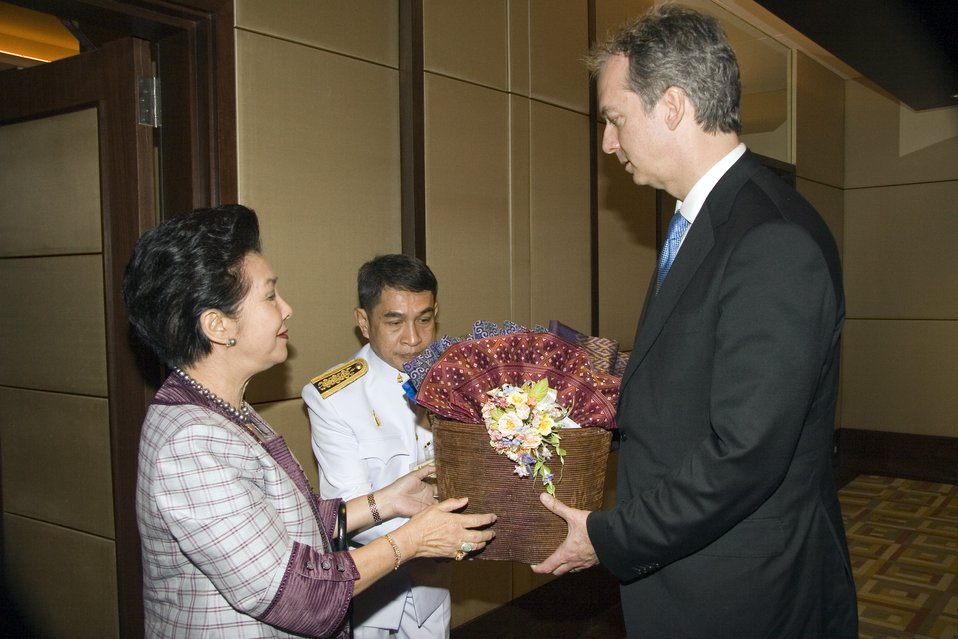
U.S. Ambassador to Thailand Meets With Thai Queen’s Lady-in-Waiting

The Queen’s Lady-in-Waiting, Thanpuying Nravadi Chaixanien, presents a gift to U.S. Ambassador to Thailand Eric G. John at the Conrad Hotel in Bangkok, Thailand July 21, 2009.